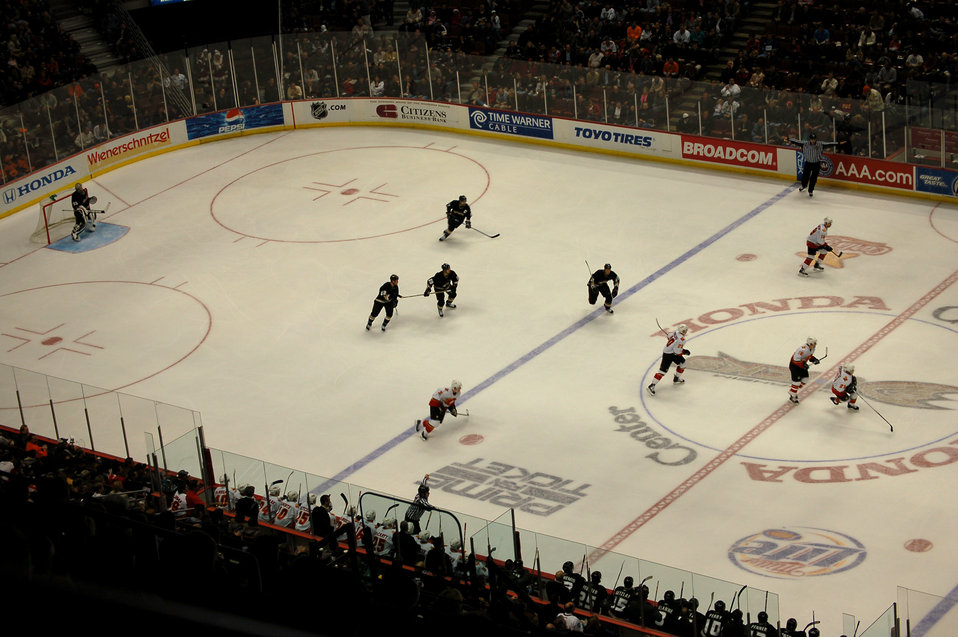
Magical weekend ends on ice

A bird's eye view of the match up between the Anaheim Ducks and Calgary Flames Dec. 18. The game was the final activity of the four-day Snowball Express event. The event was open to all military families who lost someone in the war on terrorism.